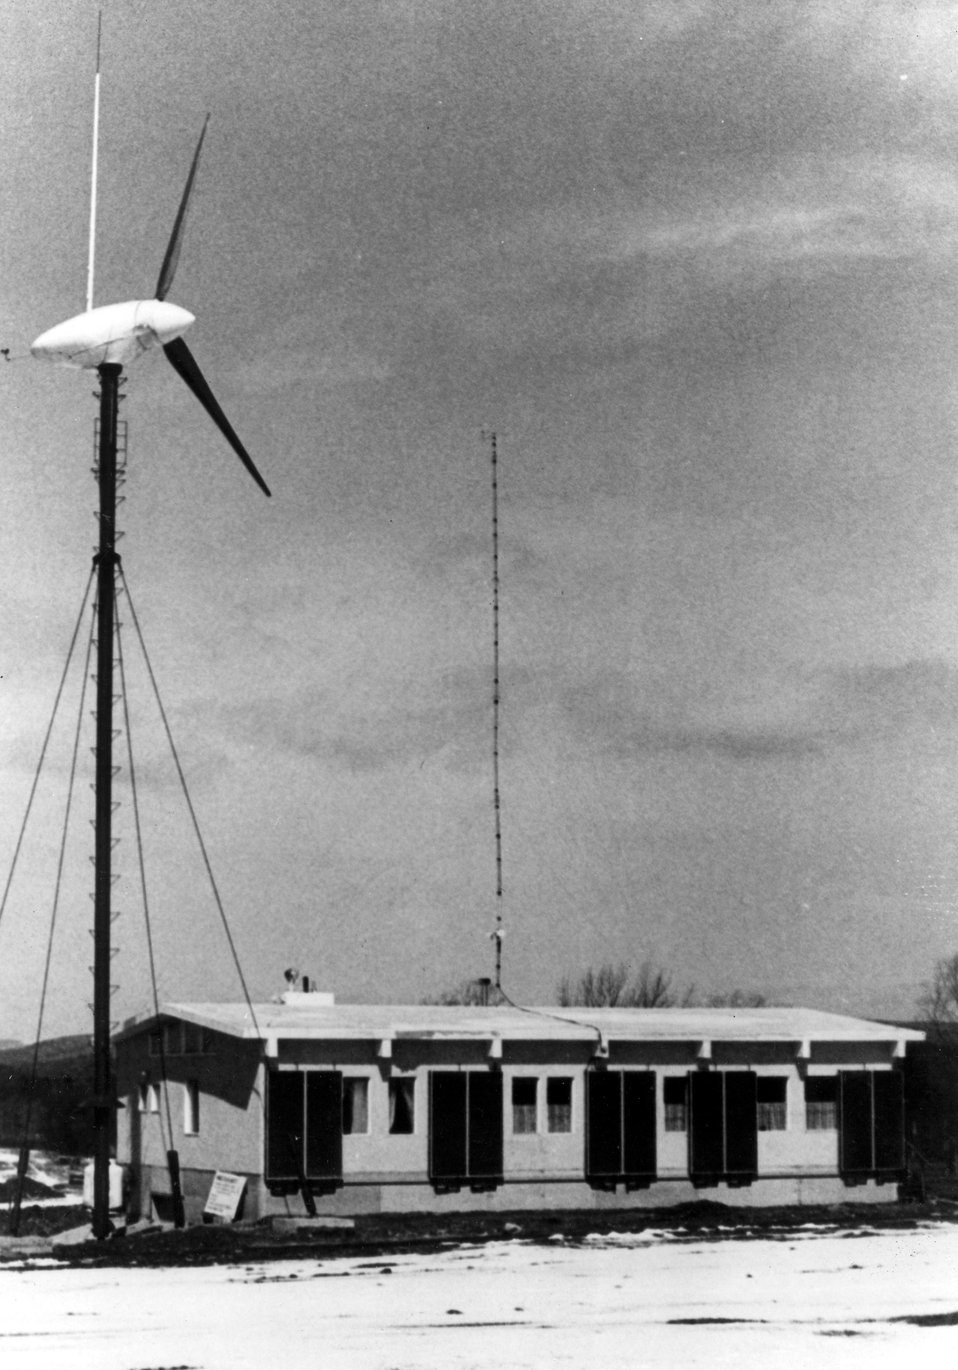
A three-bladed wind turbine and a solar heating system together provide about 80 percent of the heat needed by this experimental home at the University of Massachusetts, Amherst. c. 1977